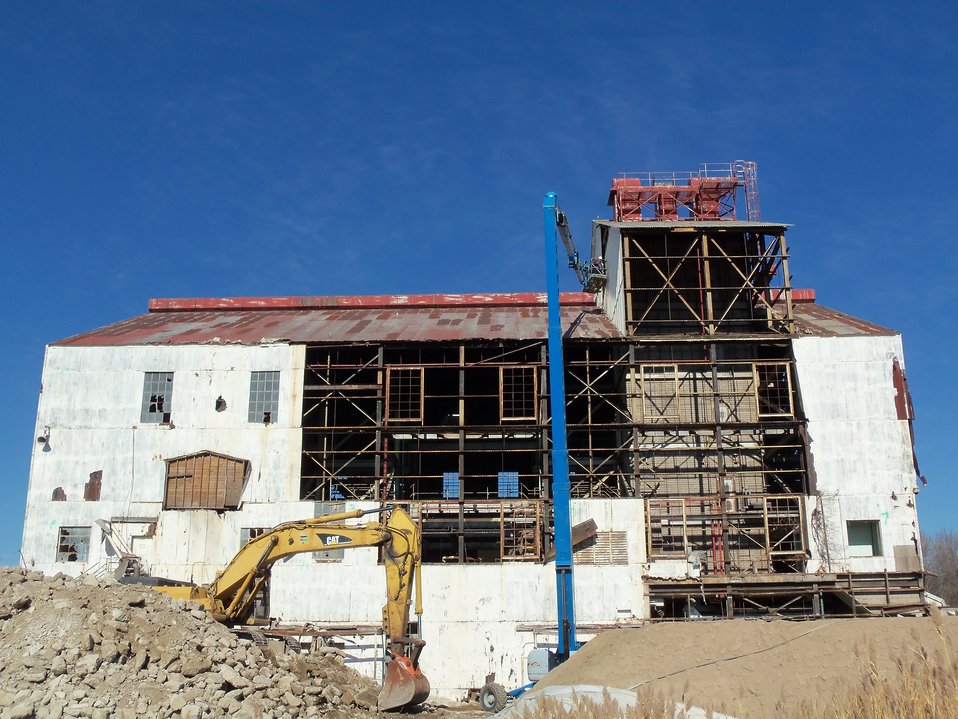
Building 401 side of building removal.
Activities from the Niagara Falls Storage Site, which is associated with the former Lake Ontario Ordnance Works. Formerly Utilized Sites Remedial Action Program (FUSRAP), a program initiated in 1974 to identify, investigate and clean up or control sites that were part of the Nation's early atomic energy and weapons program. Activities at the sites that are eligible for FUSRAP were conducted by Manhattan Engineer District (MED) or the Atomic Energy Commission (AEC), both predecessors of the Department of Energy (DOE). The U.S. Army Corps of Engineers was assigned management of FUSRAP by Congress in 1997.